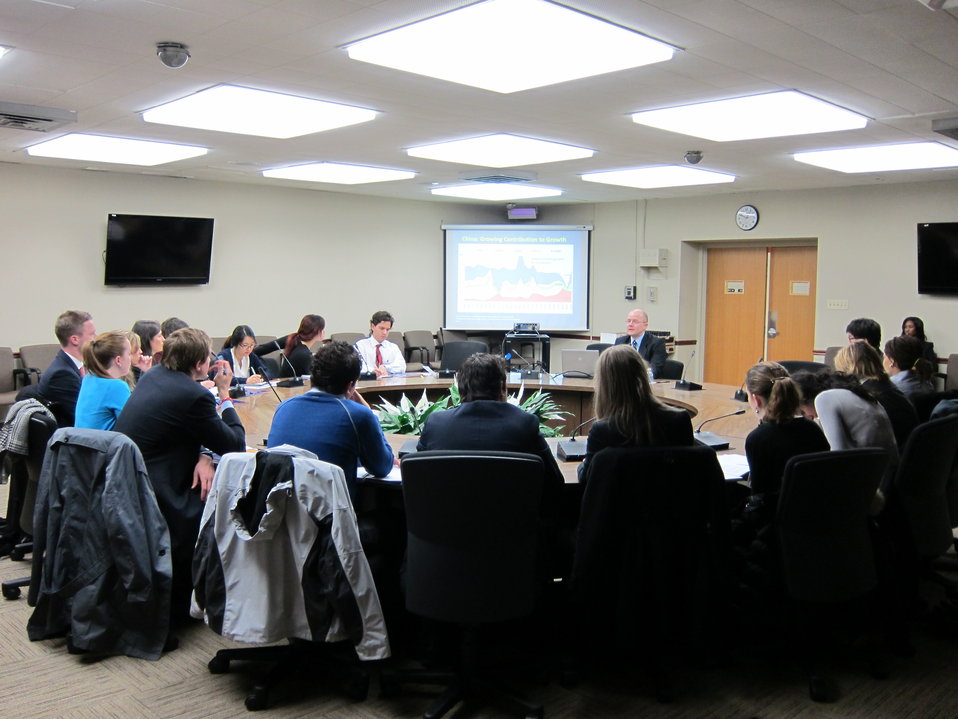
Officer Hays Meets With American University Students

Economic, Energy and Business Officer Officer Clayton Hays meets with American University students to discuss China, at the U.S. Department of State in Washington, D.C., in March 2011.